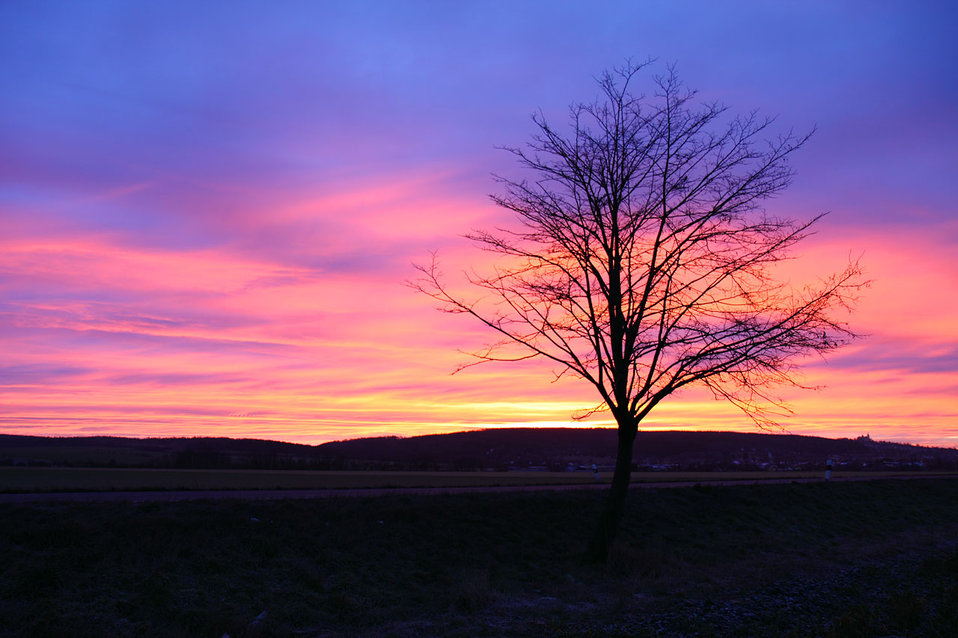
Morning sun with a tree in foreground.